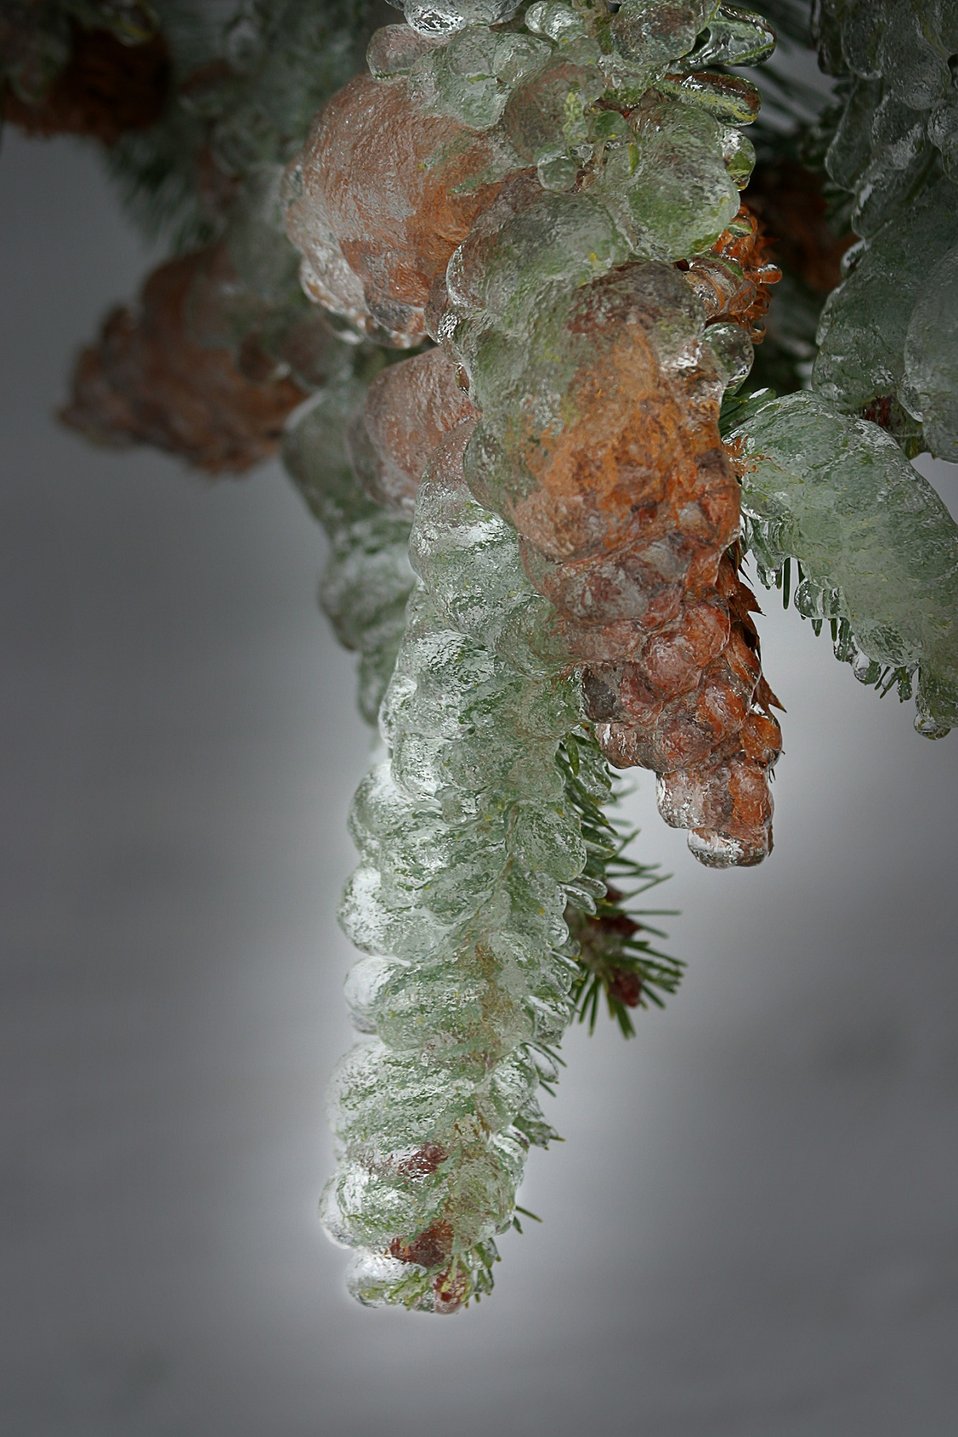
Snow and ice on Douglas Fir Bows and cones during the storm of January 2004.